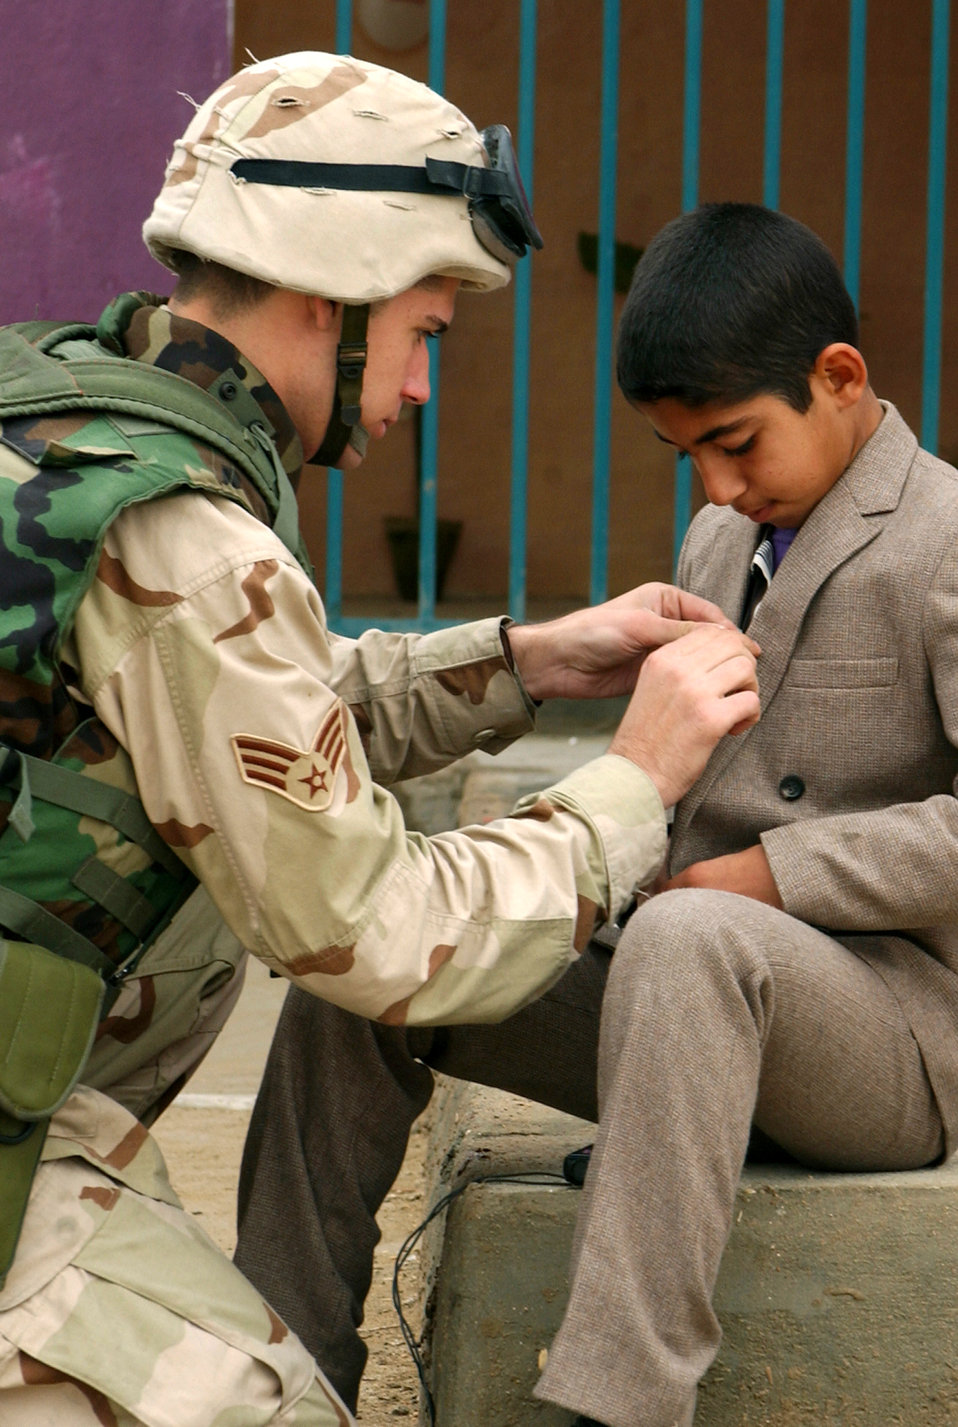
Live from Baghdad

BAGHDAD, Iraq -- Senior Airman Brent Skeen fits an Iraqi student with a microphone for an interview after a ceremony to celebrate the reopening of a primary school here. U.S. military broadcasters hit the airwaves here Dec. 10 with the first manned American Forces Radio and Television Service broadcast from the country. Skeen is a broadcaster with American Forces Network-Iraq.